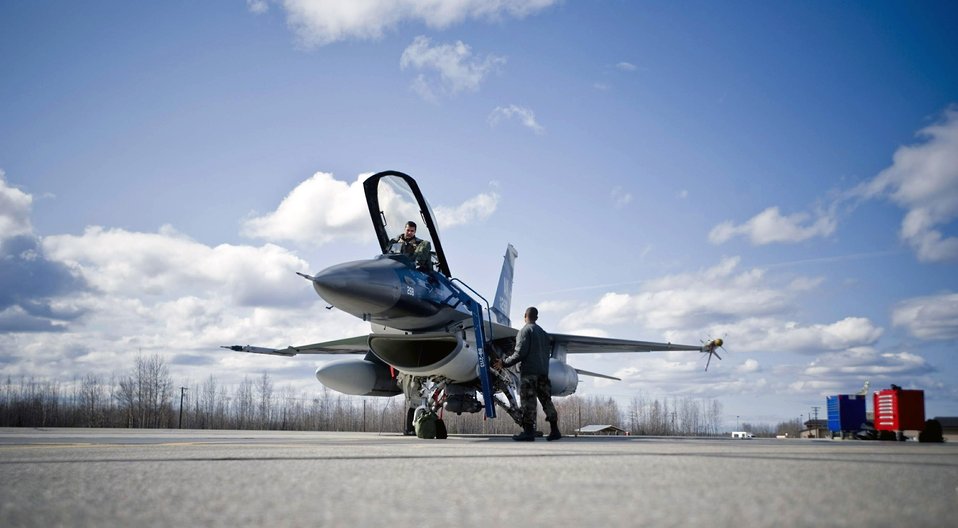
'Aggressive' training helps pilots outmaneuver enemy

Airman 1st Class Kyle Hughes attaches a ladder to an 18th Aggressor Squadron F-16 Fighting Falcon May 8 at Eielson Air Force Base, Alaska. The 18th Aggressor Squadron is participating in Northern Edge 2008. The squadron is under 24-hour operations, ensuring all aircraft are at full operability for flight during the exercise. Airman Hughes is a 354th Aircraft Maintenance Squadron crew chief.